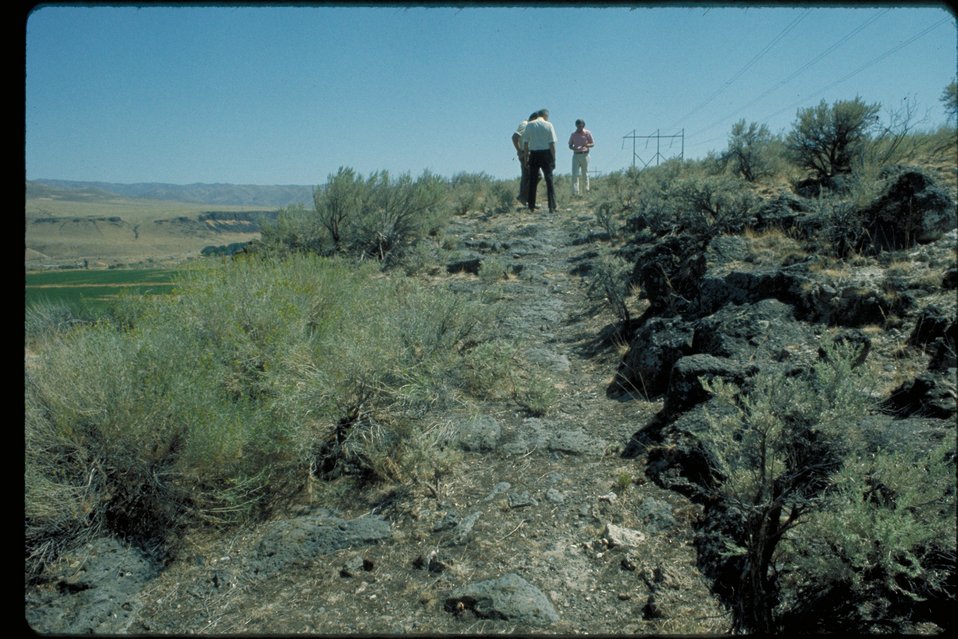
Oregon Trail south of Boise Lower Snake River District